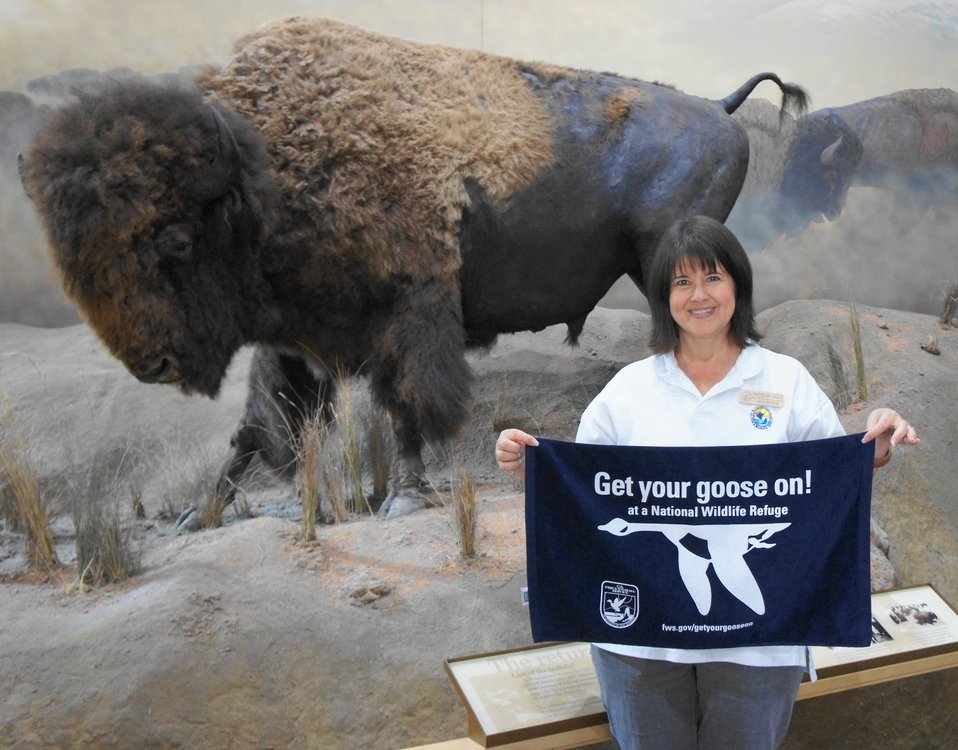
Get Your Goose On!

Wichita Mountains National Wildlife Refuge in Oklahoma.